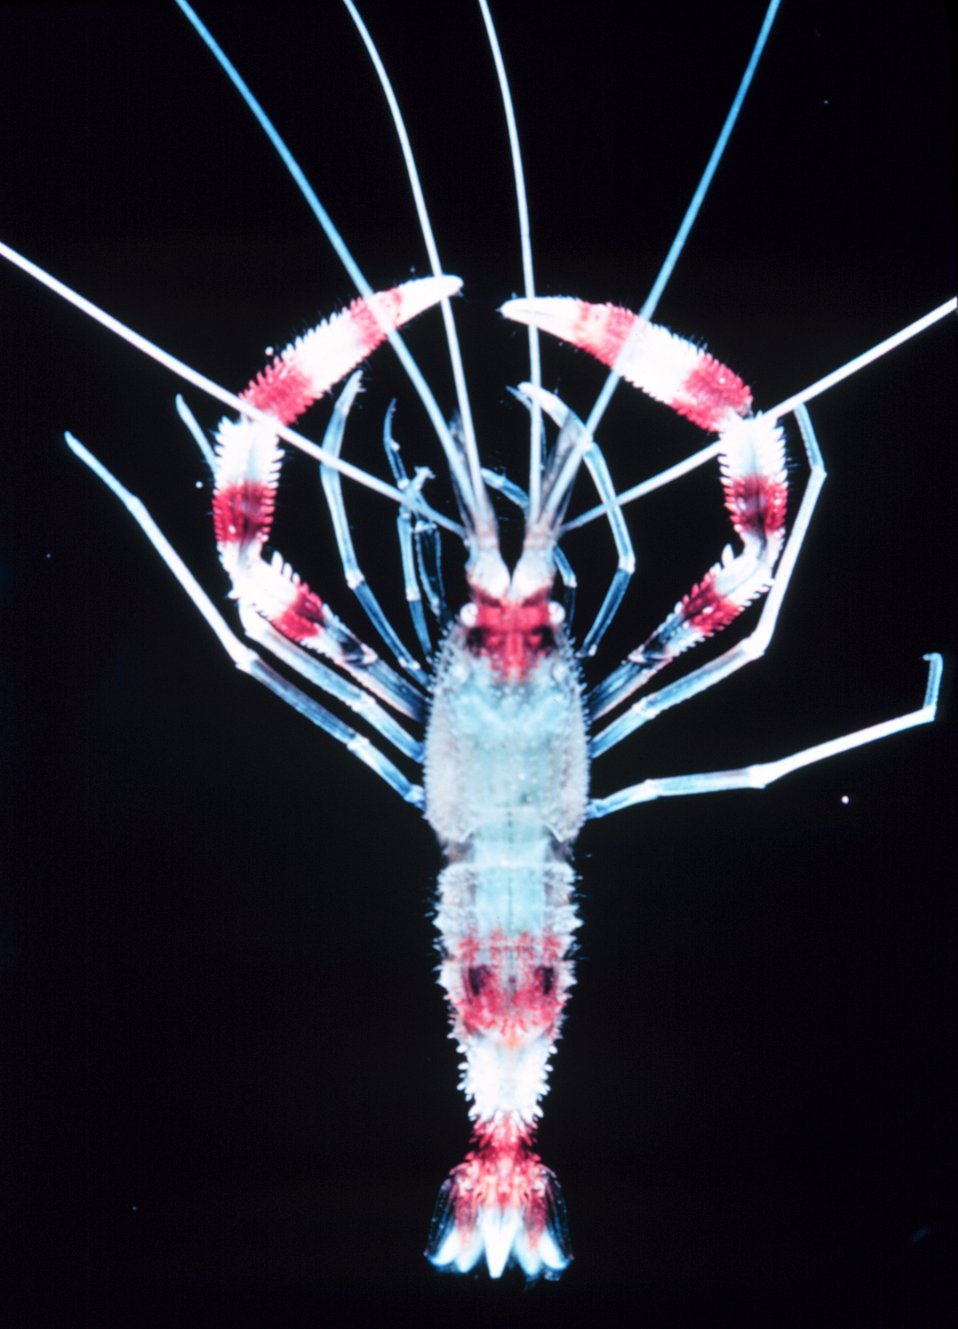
Stenopus hispidus - banded cleaner shrimp. This type of shrimp is common throughout the tropics.